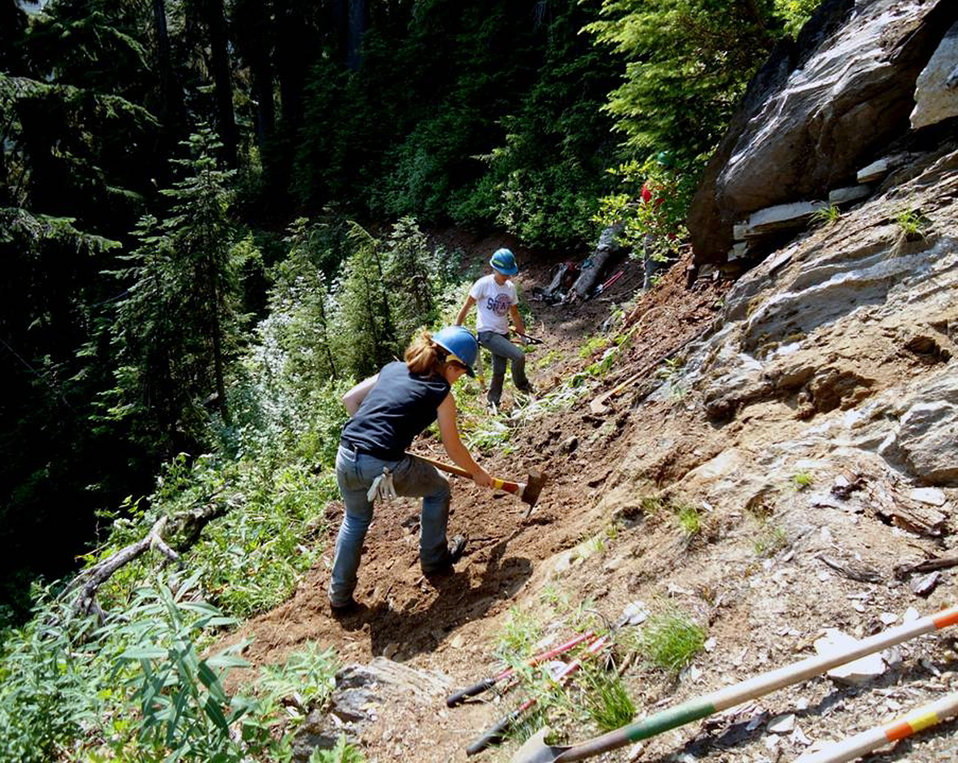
SummerJobsR6 019

Youth Conservation Corps crew members Amy Merrit and Kim Woodward work on maintaining the Pacific Crest Trail on the Mt. Baker-Snoqualmie National Forest in Washington.